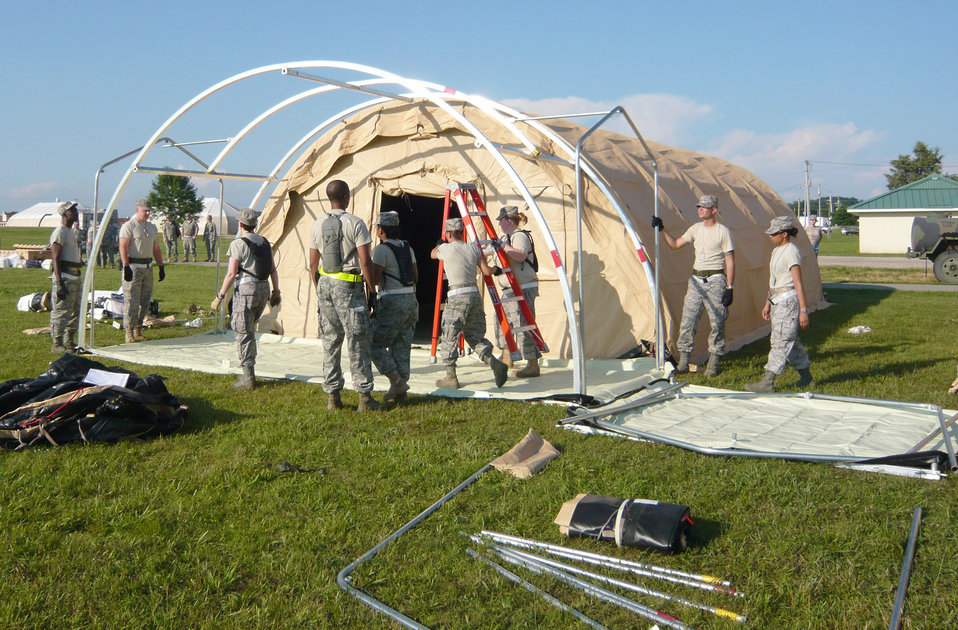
Vibrant Response

Medical professionals construct Alaskan shelters to set up expeditionary medical support during Operation Vibrant Response, a training exercise July 12 through 22, 2010, at Camp Atterbury, Ind.